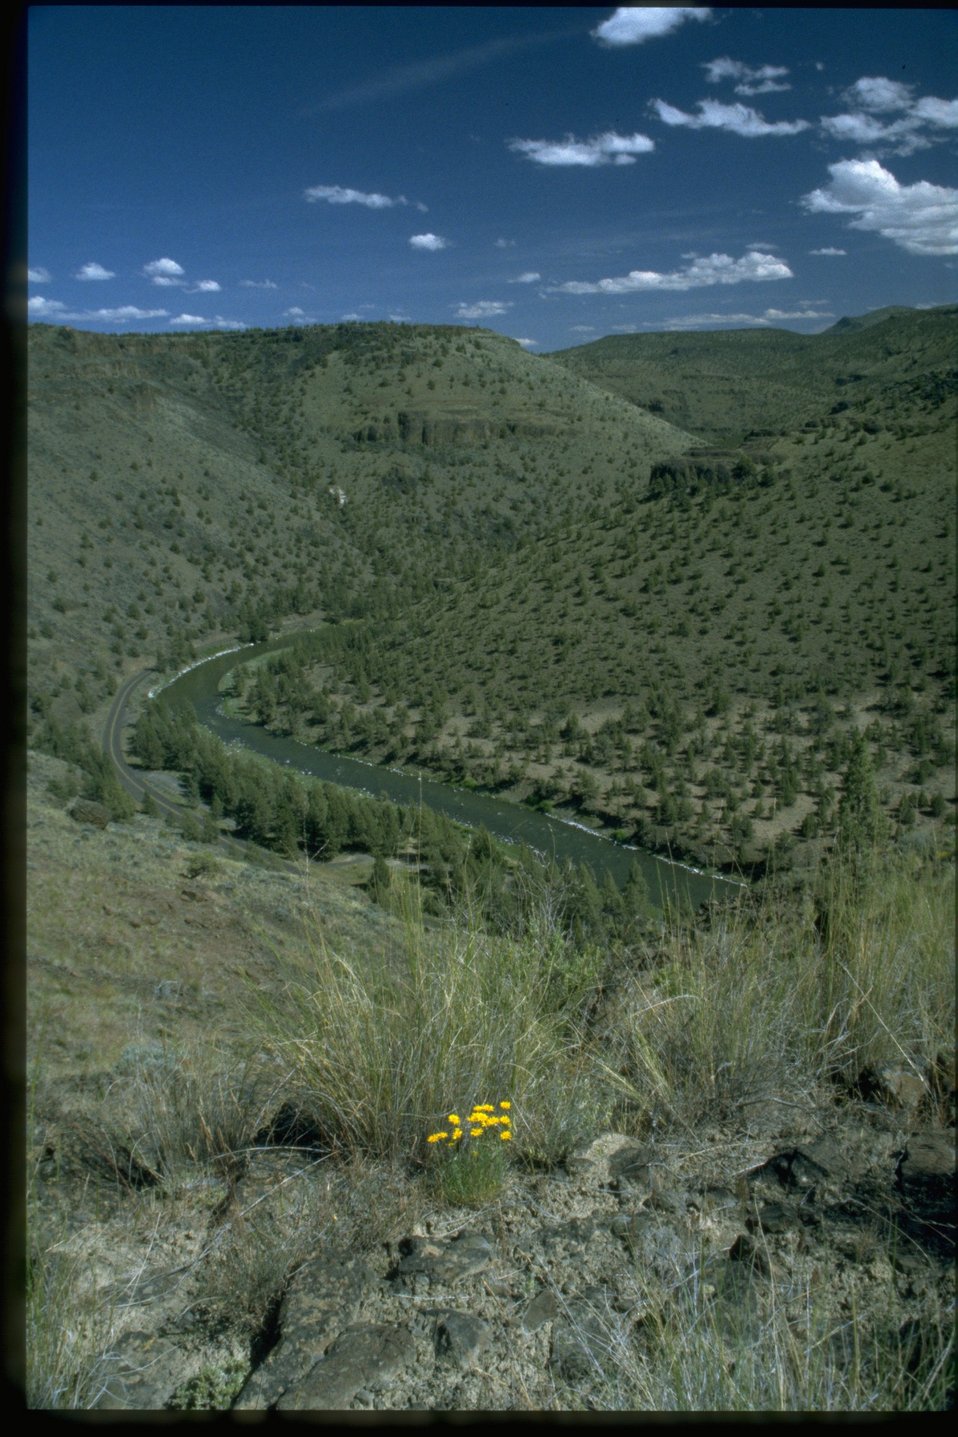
Lower Crooked Wild and Scenic River from Chimney Rock Trail.